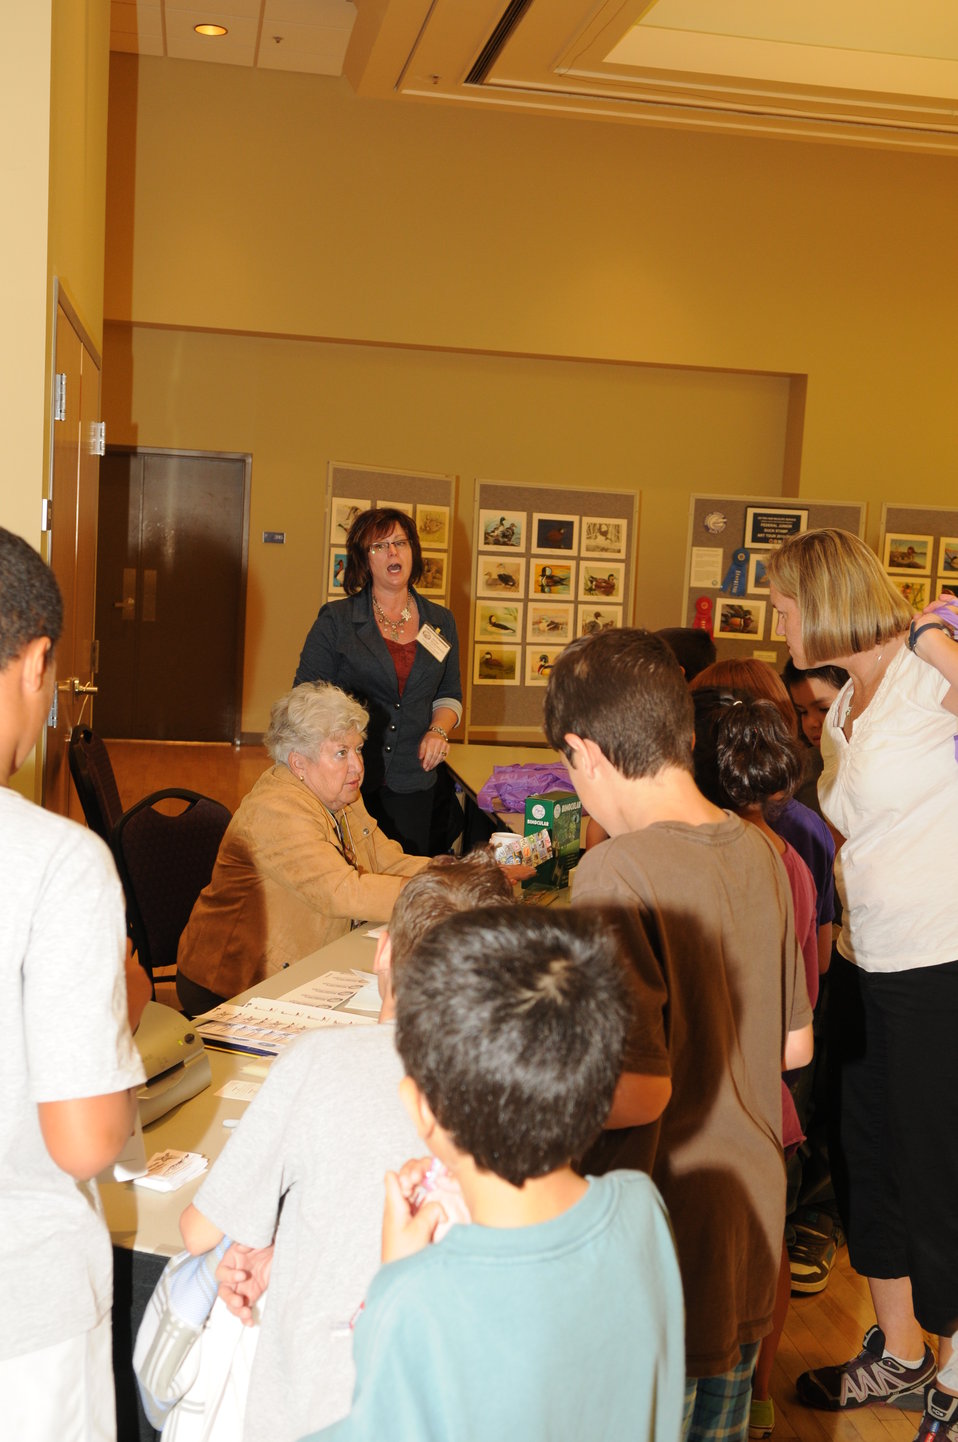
Youth Outreach

The U.S. Fish & Wildlife Service sponsored the 2012 Federal Duck Stamp Art Contest September 28 and 29 in Ogden, Utah, at Weber State University. A panel of five judges was responsible for choosing the art work used to design the 2013-2014 Migratory Bird Hunting and Conservation Stamp.